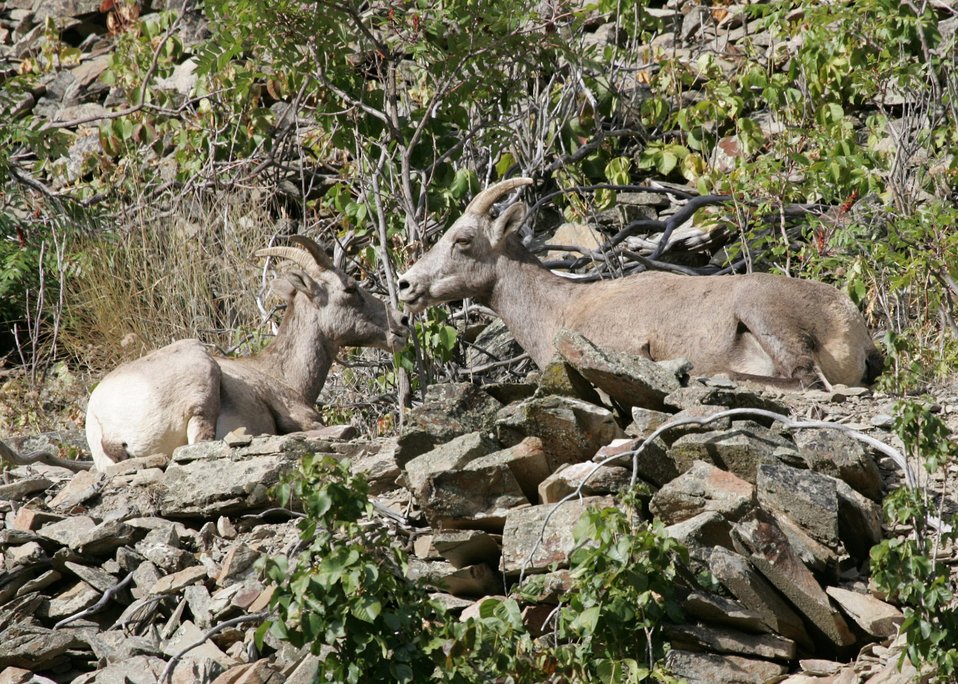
Bighorn sheep in the Connor Creek watershed in eastern Oregon.